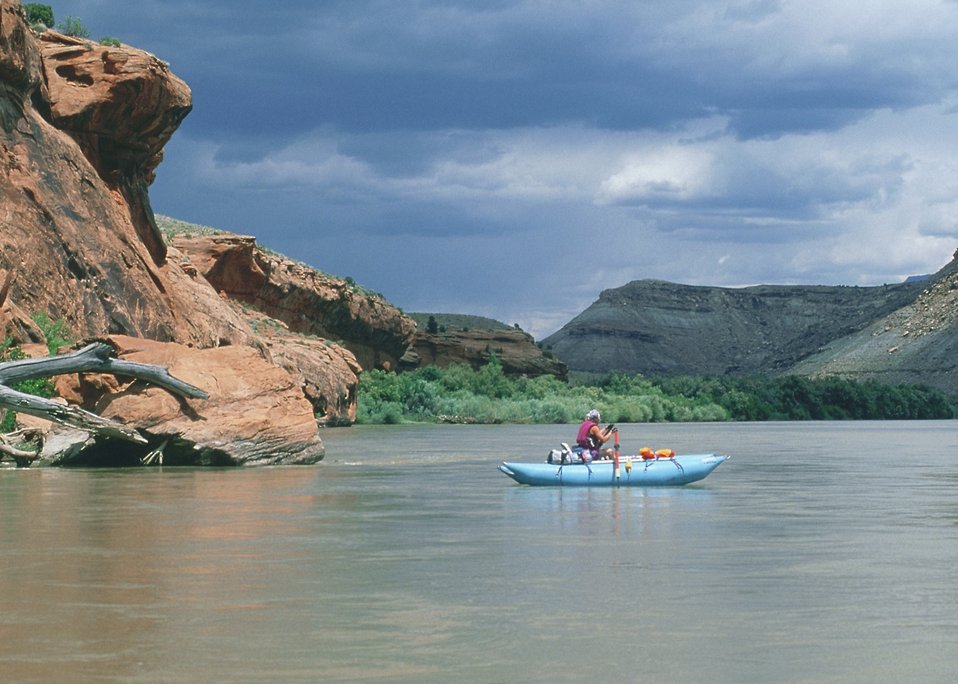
Raft in quiet water